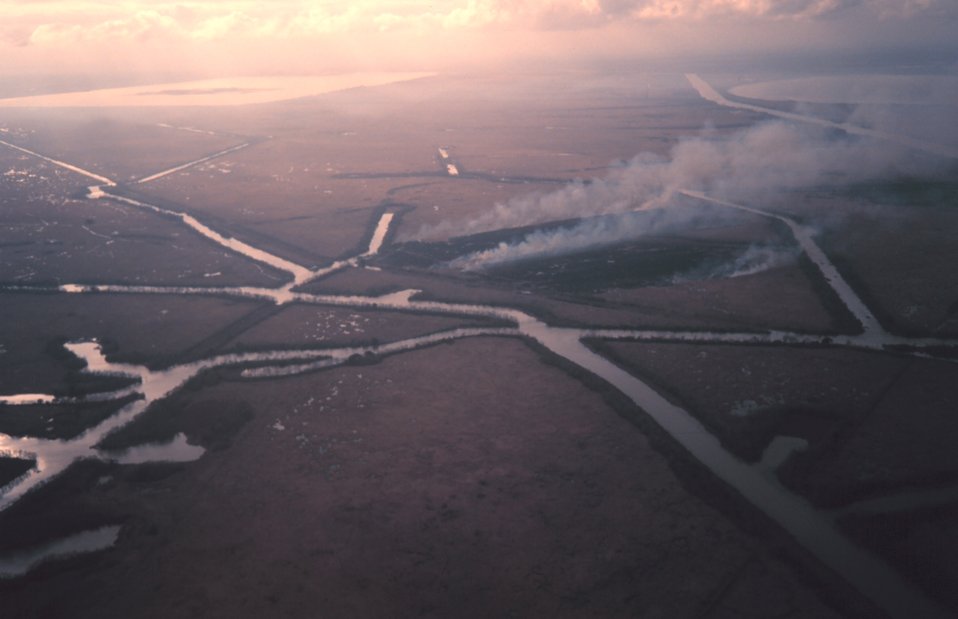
Burning off marsh south of New Orleans to improve next year's growth. Numerous canals are in this area for oil and gas exploration.